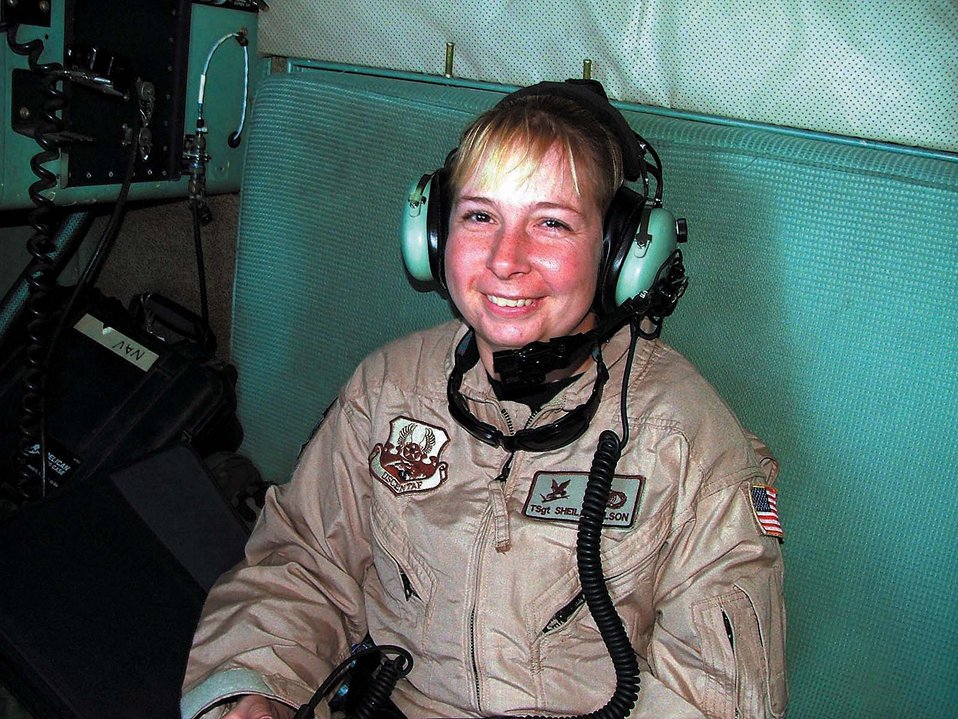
Ellsworth cops take to the skies

Tech. Sgt. Sheila Wilson rides on board a C-130 Hercules and listens in to aircrew communications during a Nov. 19 flight supporting Operation Enduring Freedom. Sergeant Wilson is one of nine security forces members from Ellsworth Air Force Base, S.D., who received fly away security team training prior to deploying. FAST missions are designed to provide the mandatory security level for Air Force aircraft even though the specific mission may require the airplane to land at remote and undisclosed locations. Sergeant Wilson is deployed from the 28th Security Forces Squadron at Ellsworth AFB.